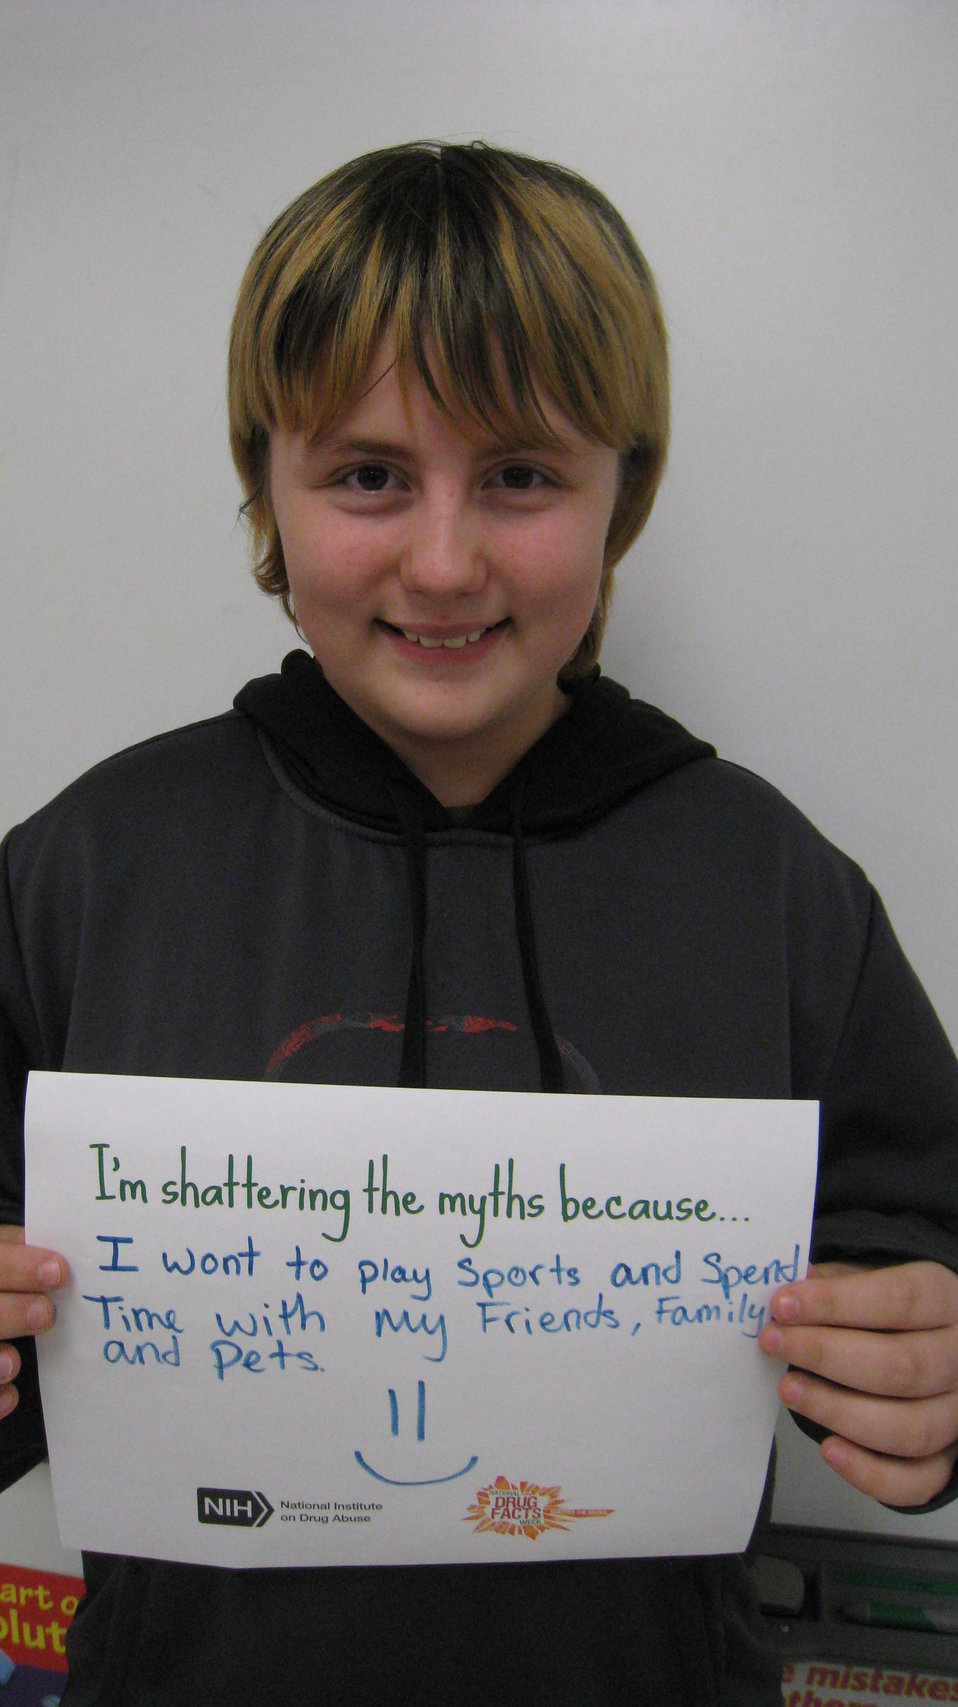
I'm Shattering the Myths Because...

Teenagers from the Van Buren County SAFE Coalition's, Youth Leadership Council (YLC) in Keosauqua, Iowa participate in various events during National Drug Facts Week, 2014.